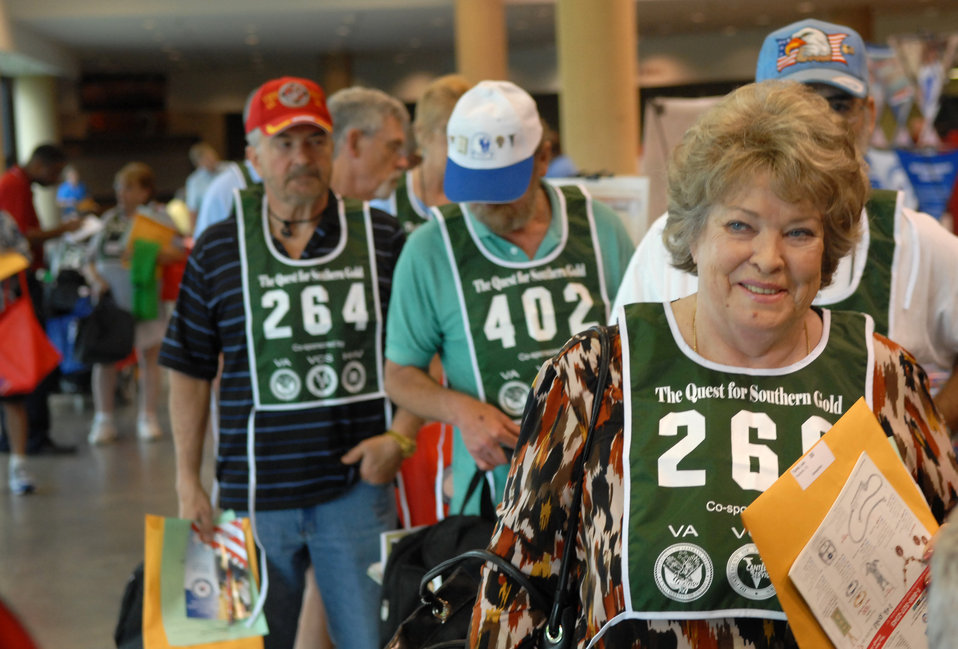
VA National Golden Age Games

Judy Tarter, a 73-year-old Navy veteran, walks through the registration line for the 23rd Annual National Veterans Golden Age Games June 1 in Birmingham, Ala. Nearly 700 senior veterans, ages 55 and older, registered to participate in the athletic competitions here.